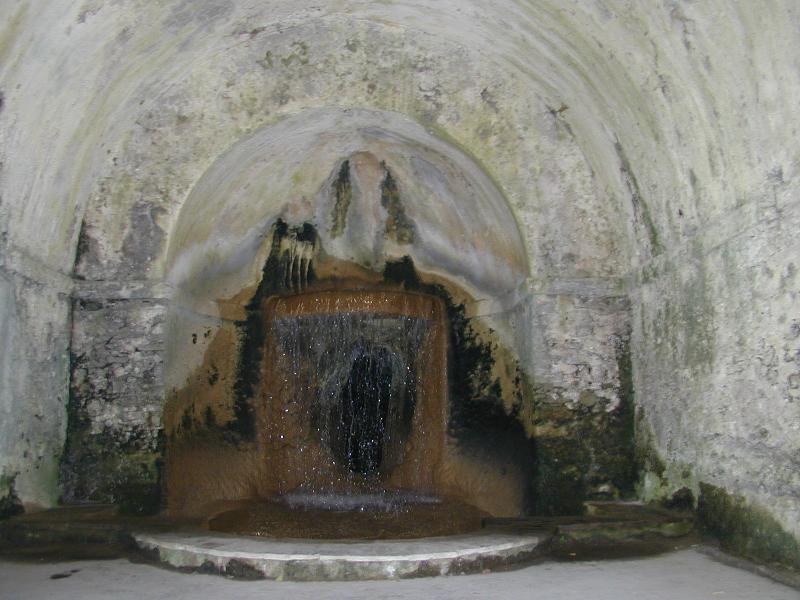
000910 tivoli v d este 36 ninfeo